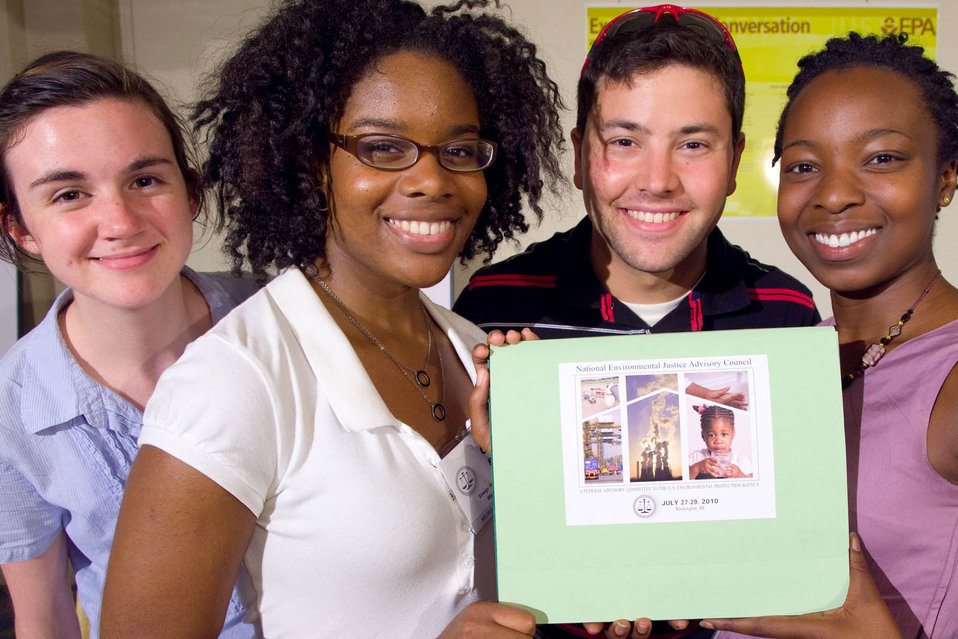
July, 2010 Environmental Justice workshop

Students at an Environmental Justice workshop in Washington, DC